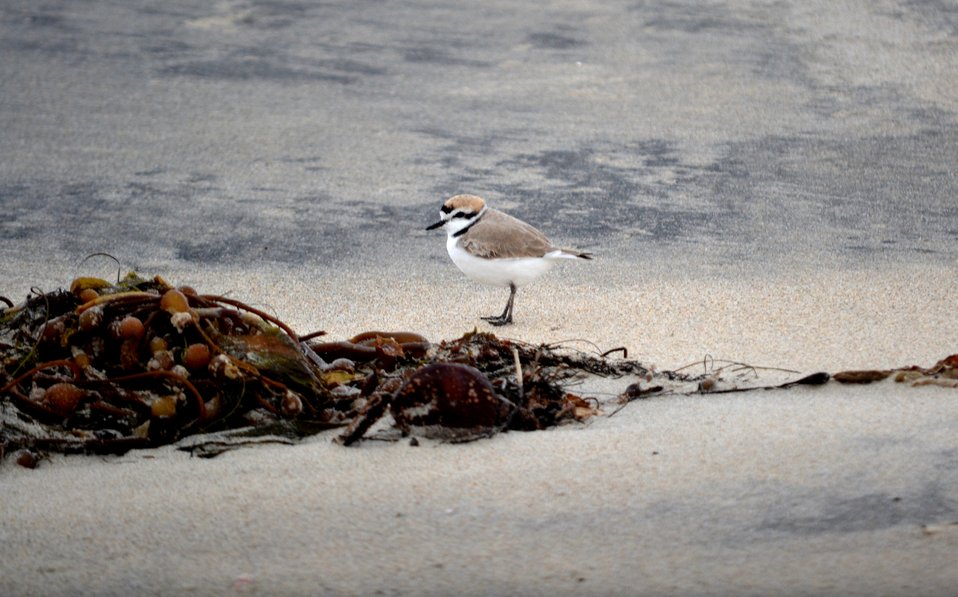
Male Western snowy plover (Charadrius alexandrinus nivosus)

Snowy plovers use kelp and sand to camouflage themselves